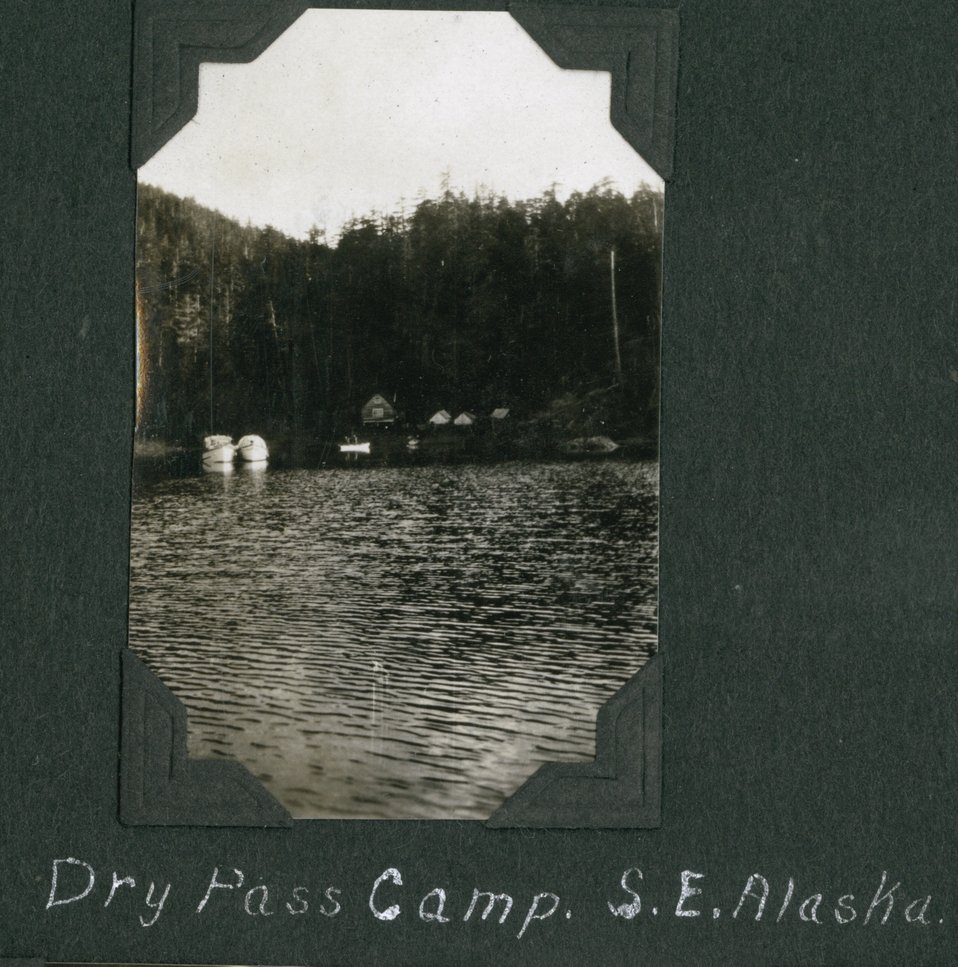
Dry Pass camp site.